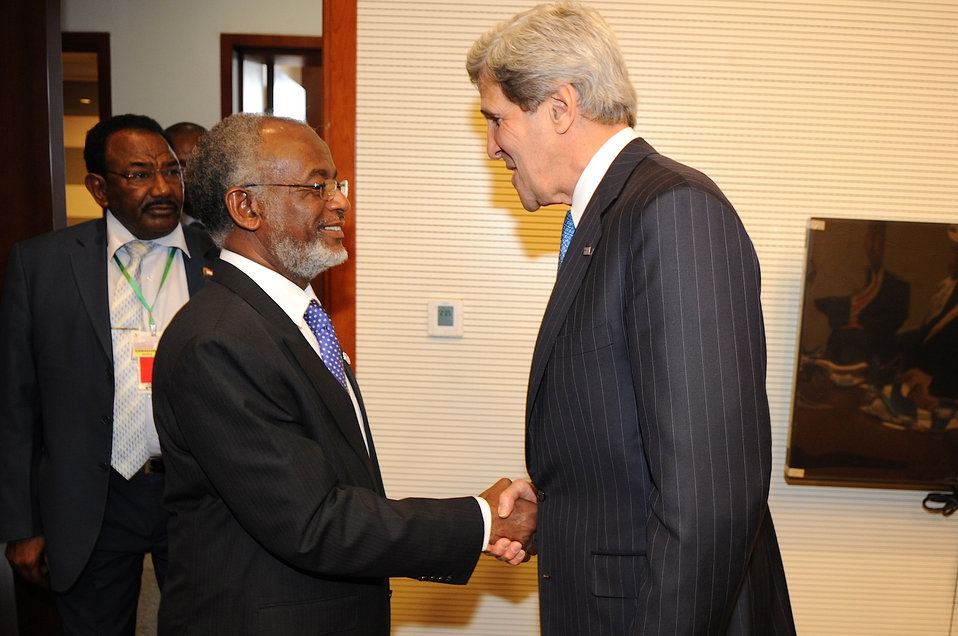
Secretary Kerry Meets With Sudanese Foreign Minister Ali Karti

U.S. Secretary of State John Kerry meets with Sudanese Foreign Minister Ali Karti, as they both attend the 50th anniversary African Union Summit in Addis Ababa, Ethiopia, on May 25, 2013.